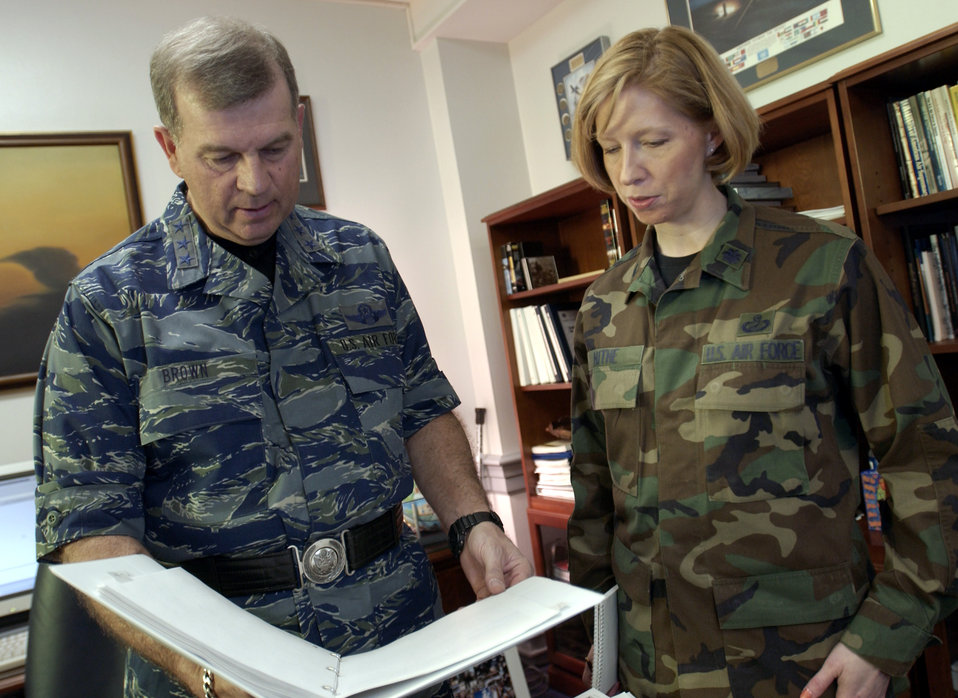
This is only a test

WASHINGTON -- Lt. Gen. Richard E.